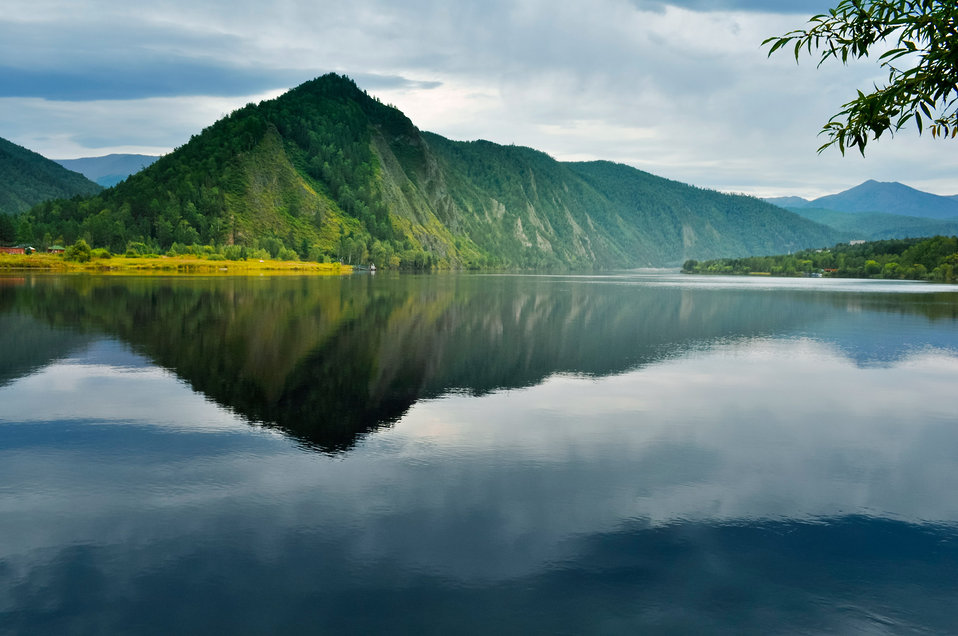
Evening landscape with the river and the mountains..